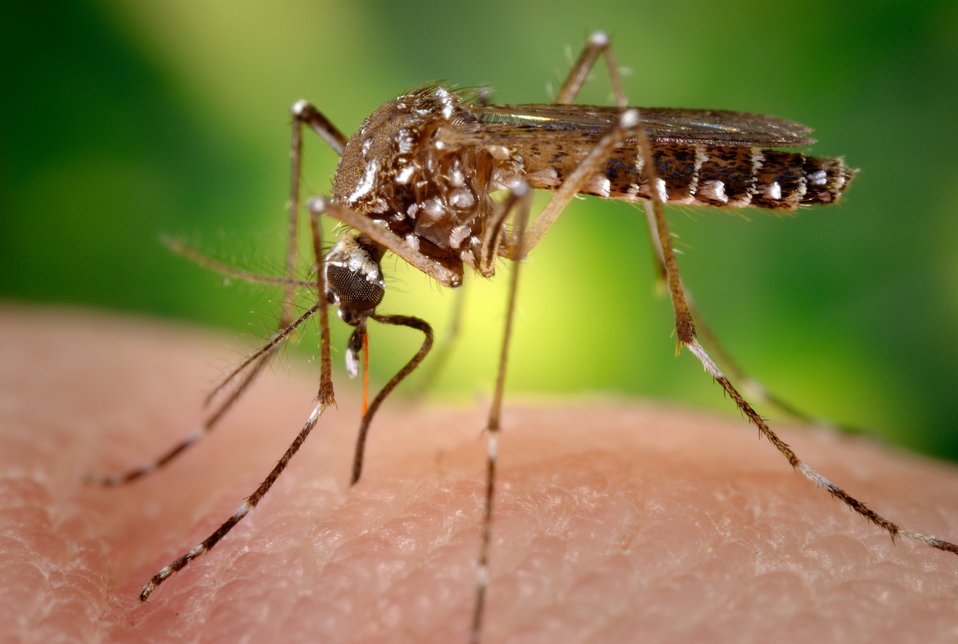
This 2006 image depicted a female Aedes aegypti mosquito as she was obtaining a blood-meal from a human host through her fascicle, which had penetrated the host skin, was reddening in color, reflecting the blood's coloration through this tubular structure. In this case, what would normally be an unsuspecting host was actually the CDC's biomedical photographer's own hand, which he'd offered to the hungry mosquito so that she'd alight, and be photographed while feeding. As it filled with blood, the abdomen became distended, stretching the exterior exoskeletal surface, thereby, causing it to become transparent, allowing the collecting blood to become visible as an enlarging intra-abdominal red mass, as is the case in PHIL# 9175, and 9176.